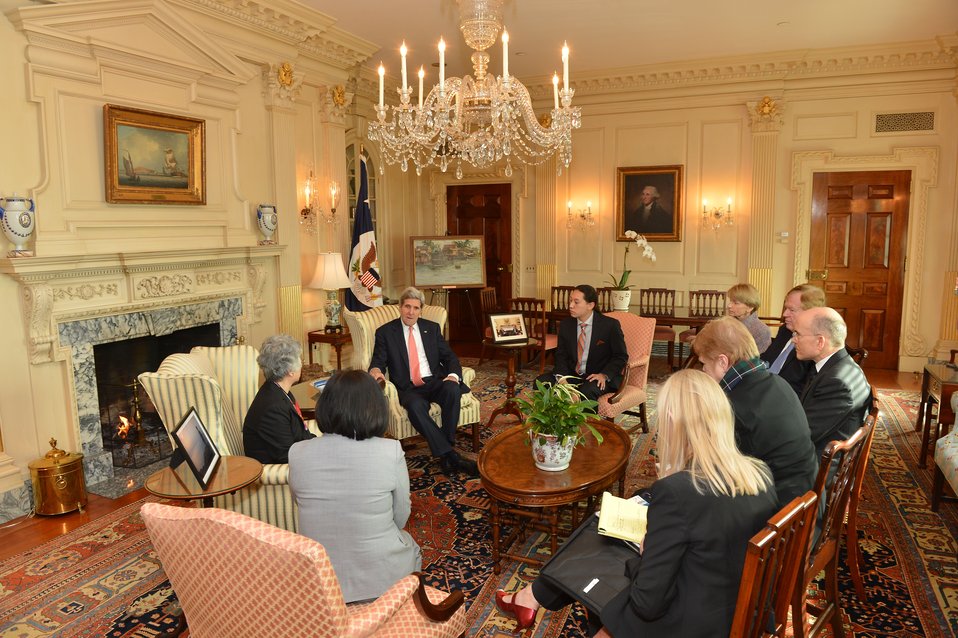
Secretary Kerry Meets With the Family of Kenneth Bae

U.S. Secretary of State John Kerry meets with the family of Kenneth Bae at the U.S. Department of State in Washington, D.C., on January 28, 2014.